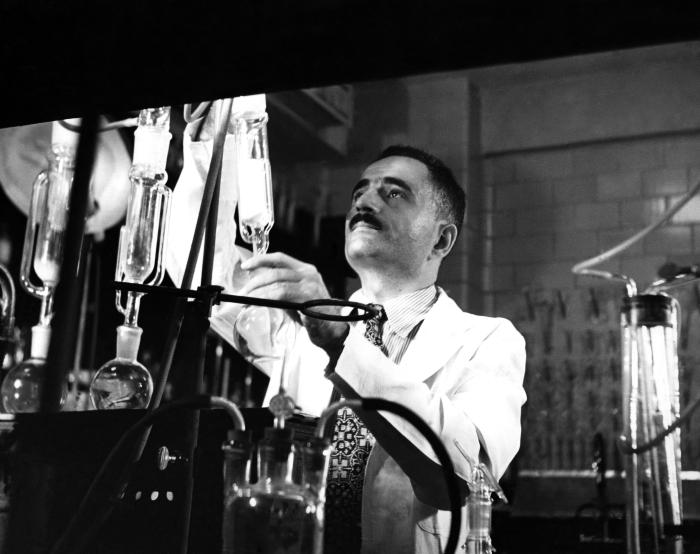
This November, 1943 photograph was provided by the Center for Disease Control's (CDC), National Institute for Occupational Safety and Health (NIOSH). Inside a laboratory setting, this image depicted a doctor who was in the process of extracting various dissolved constituents from solutions under analysis, using organic solvents to accomplish this task. It is not know which solvents were being used, or what was to be extracted, but many solvents are toxic, and are known carcinogens. However, you'll note that this man was wearing no protective garments such as a filtered breathing mask, goggles, or gloves, which would have protected him from airborne or spilt contaminants.